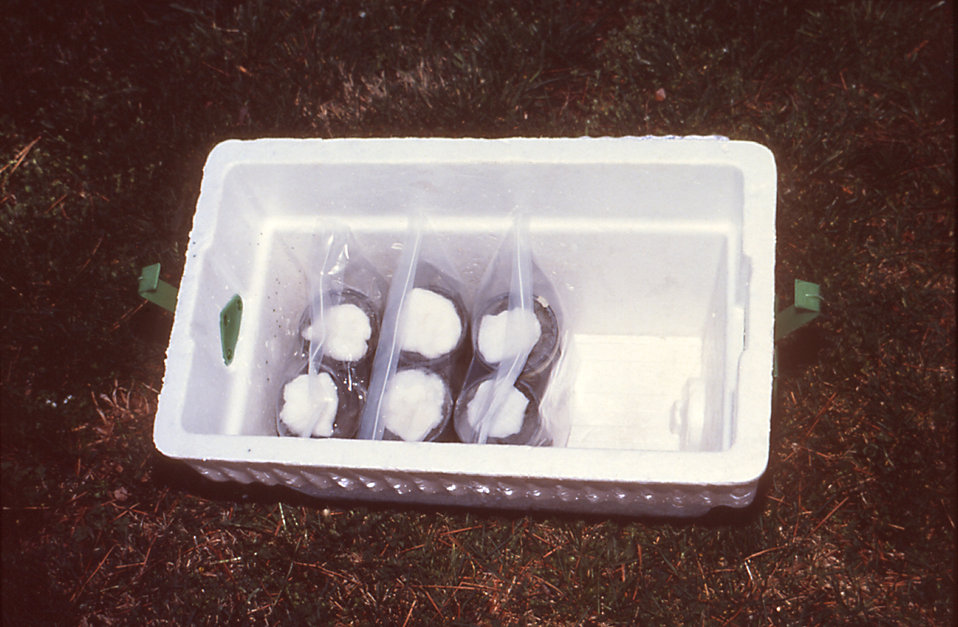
This 1981 photograph depicted a collection of bioassay cages being readied for shipment after they'd been used to collect a catch of mosquitoes from the environment.